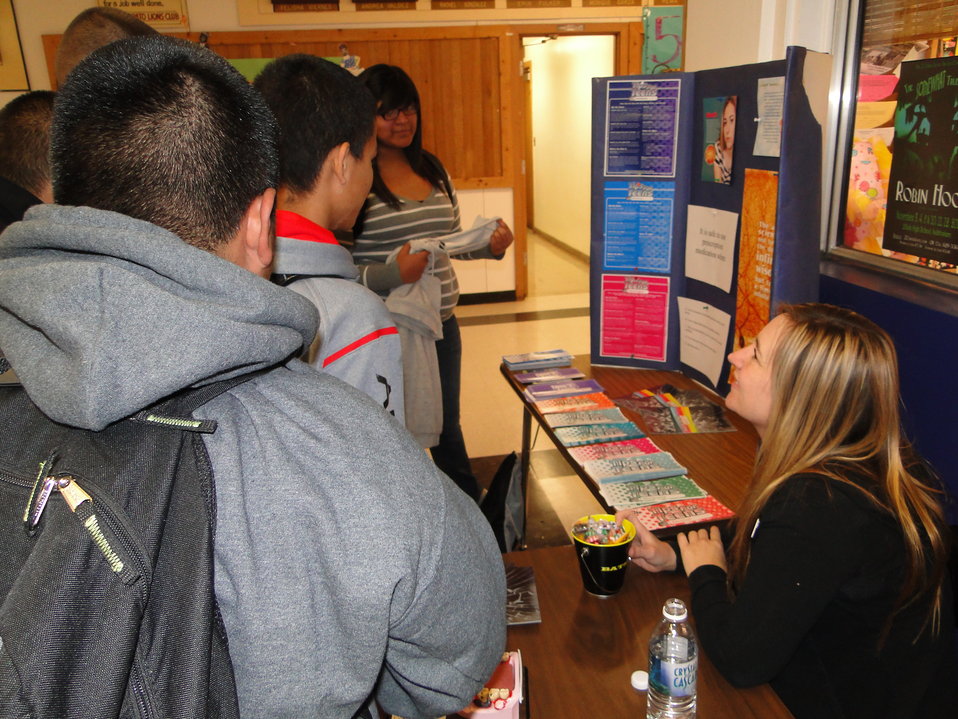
Wapato High school participated in NDFW by having a question of the day contest using questions from the National Drug IQ Challenge. Groups were determined by lunch hour and the groups competed to see who would answer the most questions correctly. Each day there was a new question and a drug fact of the day with boards, brochures, and Q&A sessions.